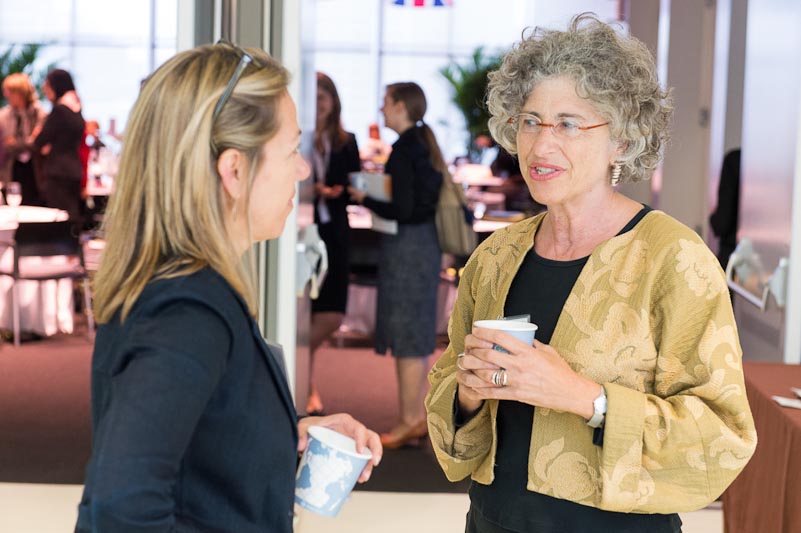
Break at Women in Clean Energy Symposium